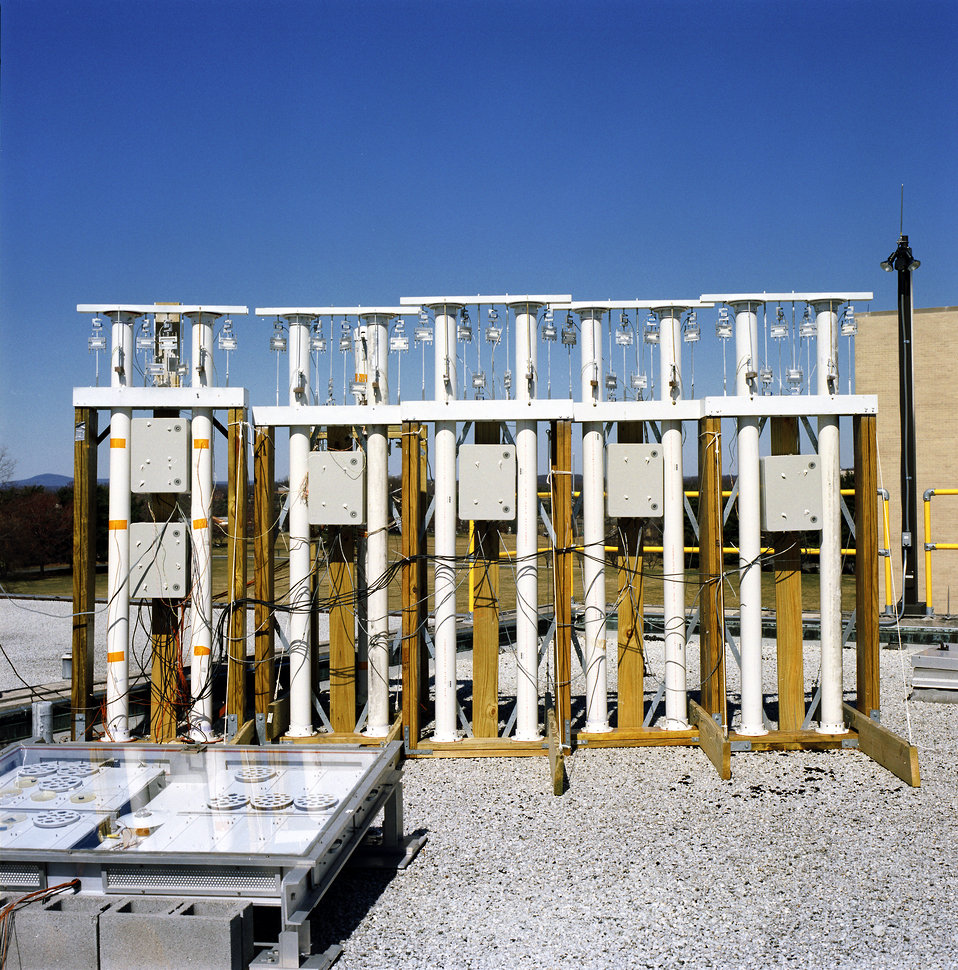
Sealant Testing Device

Mounted on the roof of a building on NIST's Gaithersburg, Md., campus, this NIST-developed device is designed to induce temperature-caused strains on sealant specimens while monitoring loads and displacements. Affixed to a rigid base, the top segments of PVC pipe expand and contract with changes in temperature. Sensors, load cells, and specimens--sandwiched between aluminum blocks--are suspended from the top crosspiece, which moves, and are attached to the same rigid base. Weather tracking station is in the foreground.